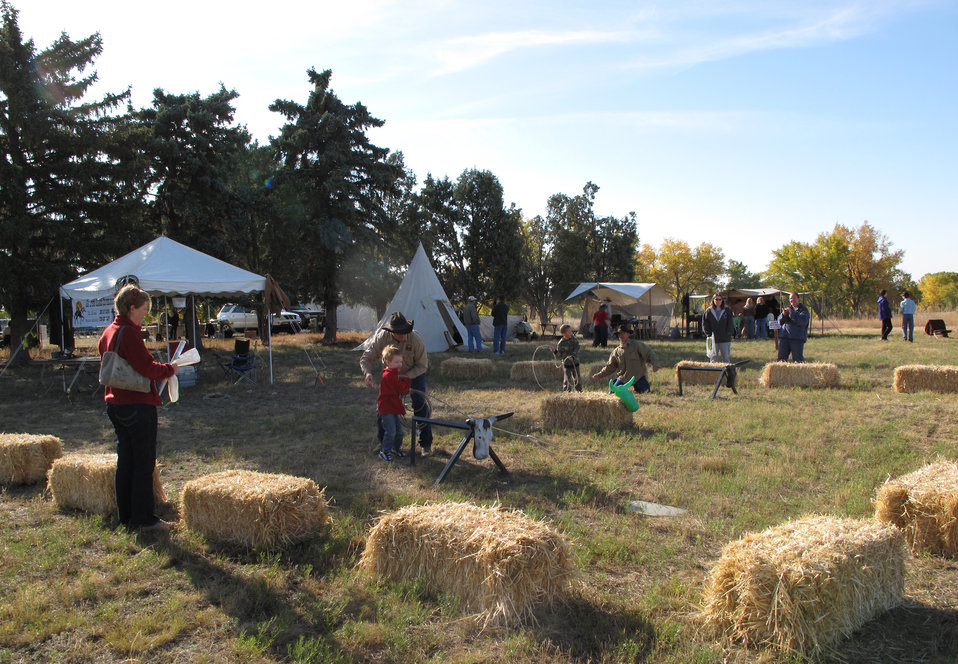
Refuge Round-up 2010

Lasso lessons.